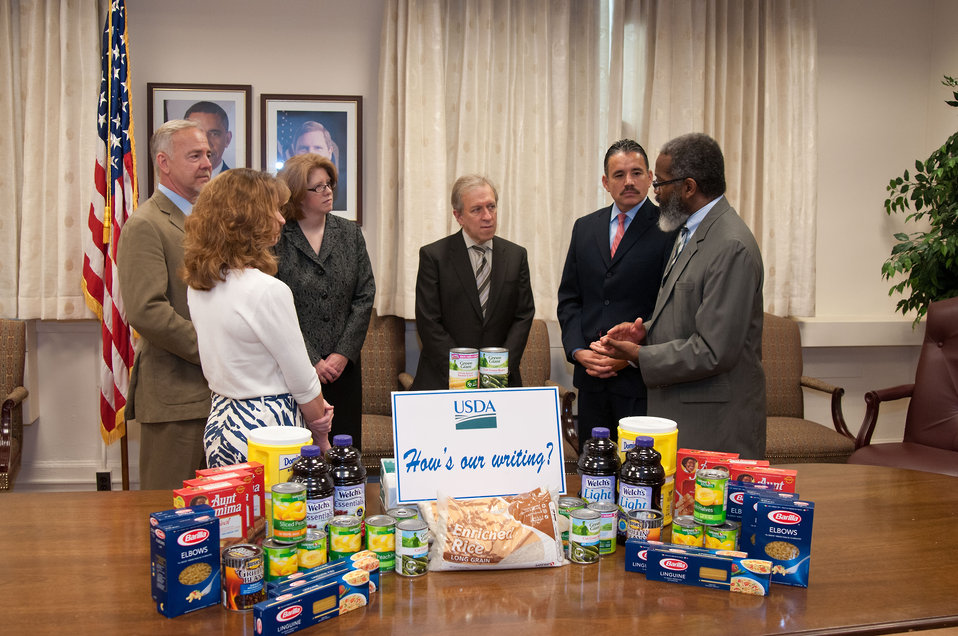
The U.S. Department of Agriculture (USDA) recently received an “A” on a report card from the Center for Plain Language a non-profit group that monitors the Plain Writing Act of 2011. USDA was the only government agency that received an “A” for all documents, new and revised since the Plain Writing act became law, October 2011. The Plain Writing Committee wagered what grade USDA would receive and the losers of the wager were to donate 25 pounds of food each to the USDA Feds Feed Families food drive. The donation was displayed in the Departmental Management conference room in Washington, DC Monday, July 23, 2012. (L to R Terry Bish, Public Affairs Specialist, Natural Resources Conservation Service, Beth Gaston, Animal and Plant Health Inspection Service, Jerry Mande, Deputy Under Secretary, Food Safety Inspection Service and Senior Official for Plain Writing, Suzanne Austin-Kashawlic, Employee Relations Specialist, Natural Resources Conservation Service, Oscar Gonzales, Deputy Assistant Secretary for Departmental Administration and Dr. Gregory Parham, Assistant Secretary for Departmental Administration (not pictured James Gore, Deputy Chief, Natural Resources Conservation Service).